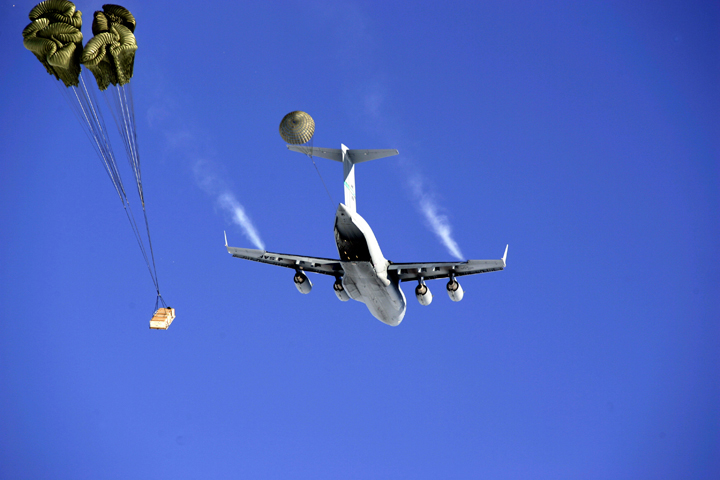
C-17 makes its first South Pole airdrop

A C-17 Globemaster III drops pallets of cargo Dec. 20 during the first C-17 airdrop to the South Pole. Airmen from the 62nd and 446th Airlift Wings at McChord Air Force Base, Wash., delivered 70 tons of supplies to the National Science Foundation team wintering there. The mission was a